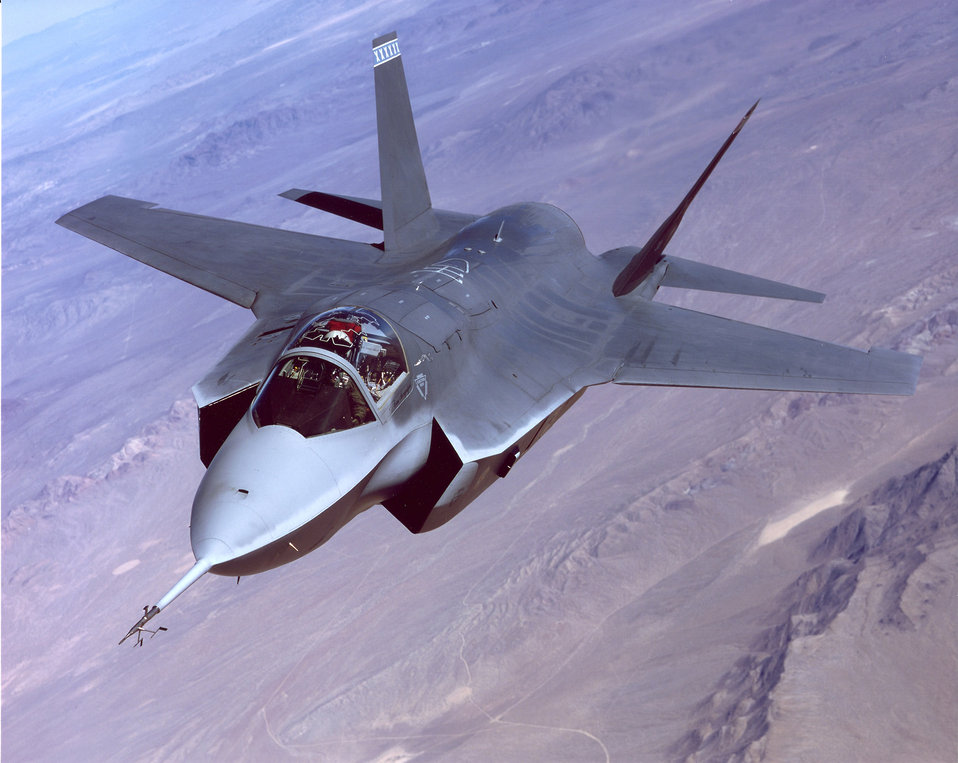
X-35

The X-35 Joint Strike Fighter demontrator